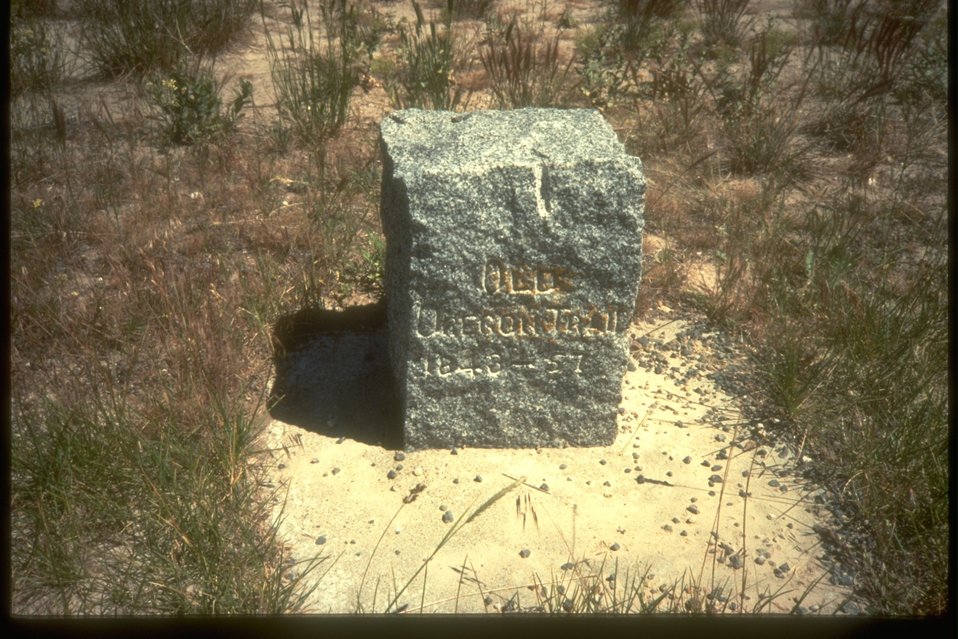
Meeker Marker Monument reading: "Old Oregon Trail 1848-57." Located at the bottom of the hill below the Interpretive center.